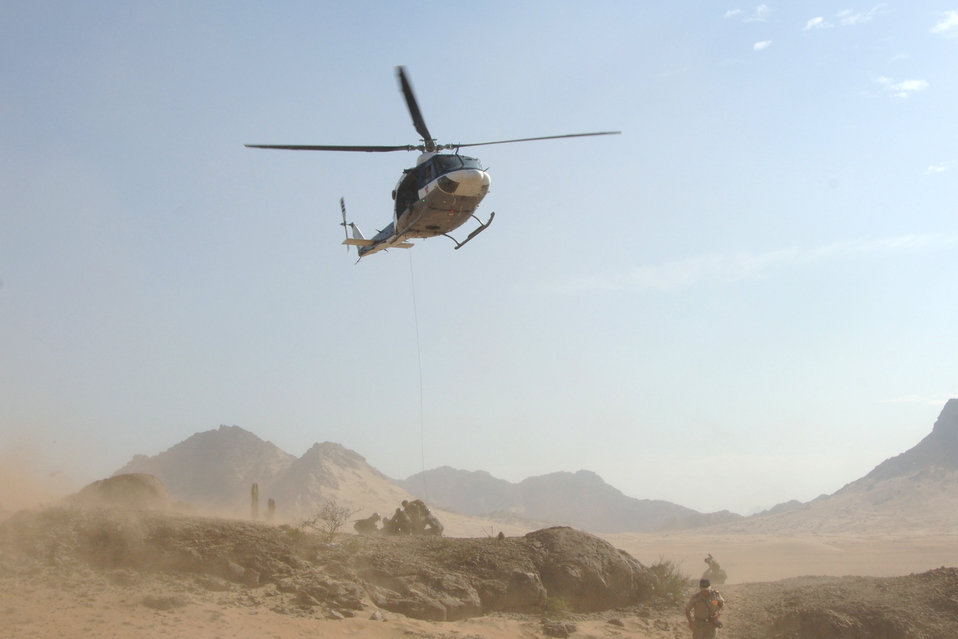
U.S., Peruvian Air Forces reach milestone

A Peruvian Air Force helicopter hovers overhead while members of the U.S. and Peruvian Air Forces perform a joint combat search and rescue exercise Feb 14 Chiclayo, Peru. The exercise was part of Falcon and Condor 2007, a joint exercise between the U.S. and Peruvian Air Forces.